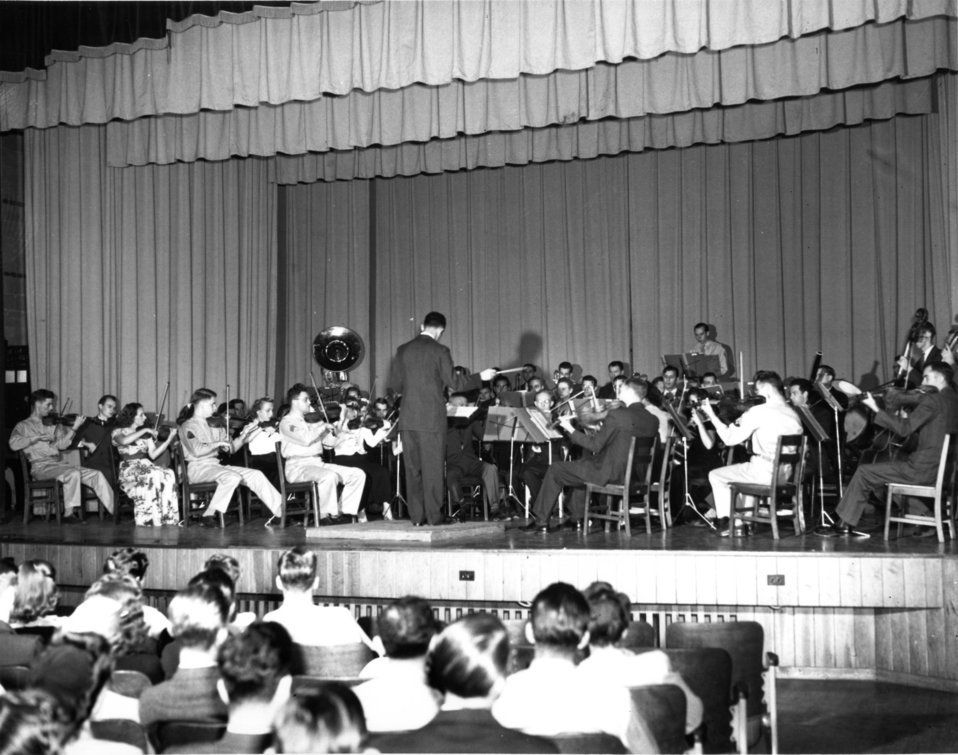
Recreation at Oak Ridge